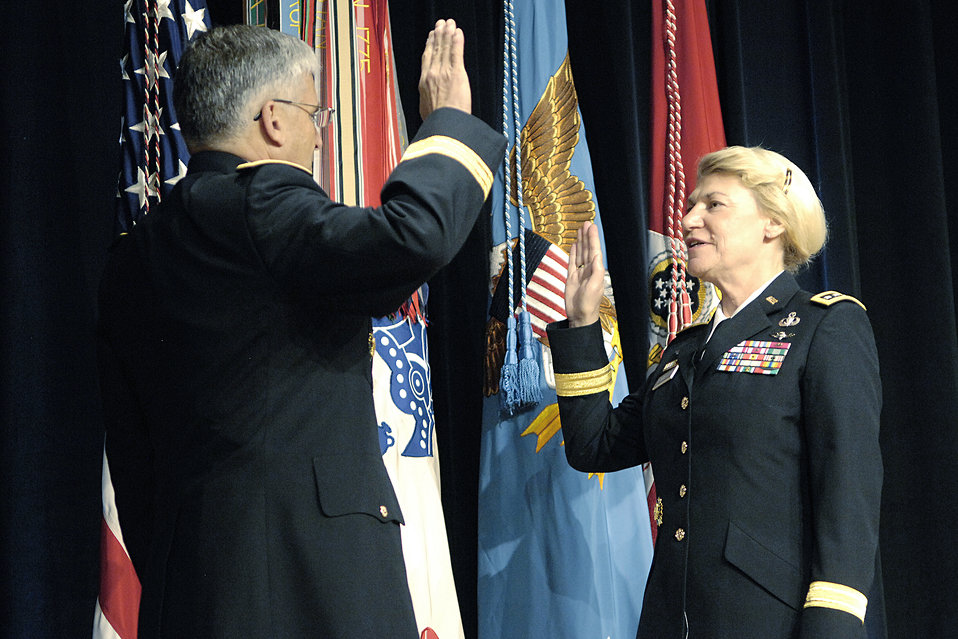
First female four-star general promoted

Chief of Staff of the Army Gen. George W. Casey administers the oath of office to Gen. Ann E. Dunwoody in during her promotion ceremony Nov. 14 at the Pentagon. General Dunwoody made history as the nation's first four-star female officer.